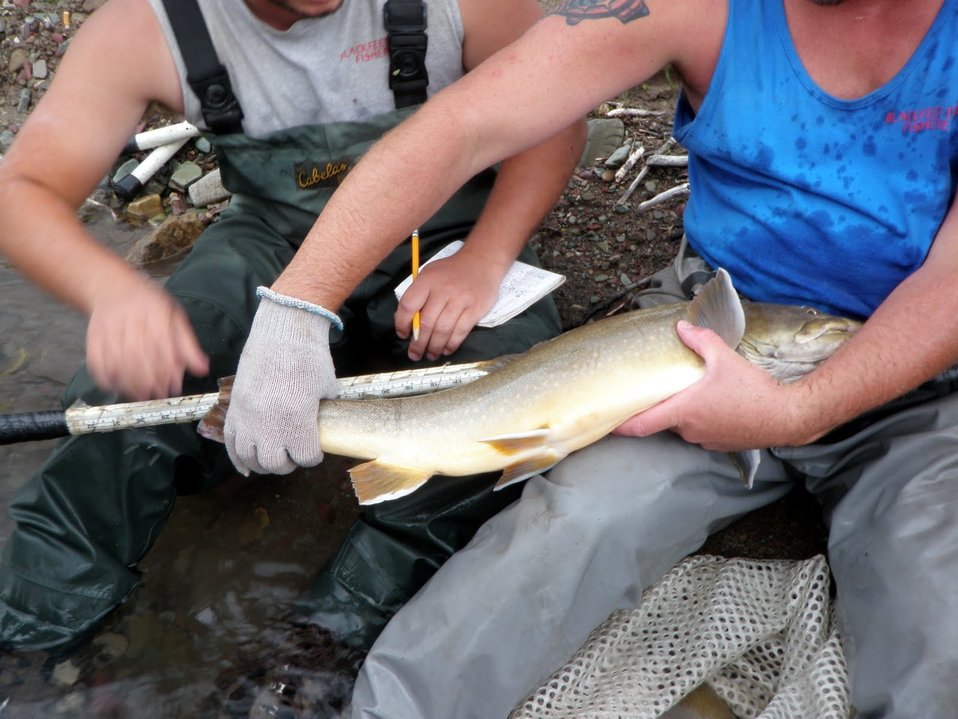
Measuring Bull Trout

The biologists measured the bull trout they caught for their survey.